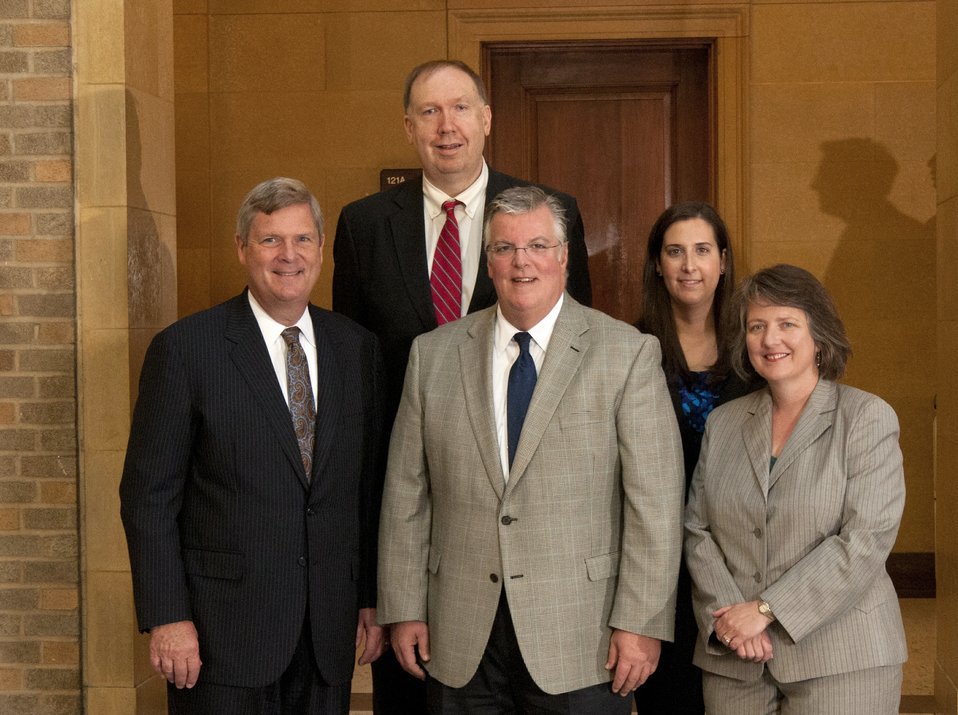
Agriculture Secretary Tom Vilsack and Deputy Agriculture Secretary Kathleen Merrigan with Honor Award Group Food Safe Families Campaign, Food Safety and Inspection Service (FSIS) on the patio of the U.S. Department of Agriculture in Washington, D.C. on Wednesday, Sept. 12, 2012. The Food Safe Families Campaign provided significant achievement in advancing USDA’s public health mission through the development of the Food Safe Families multimedia public service campaign to help families prevent food poisoning.